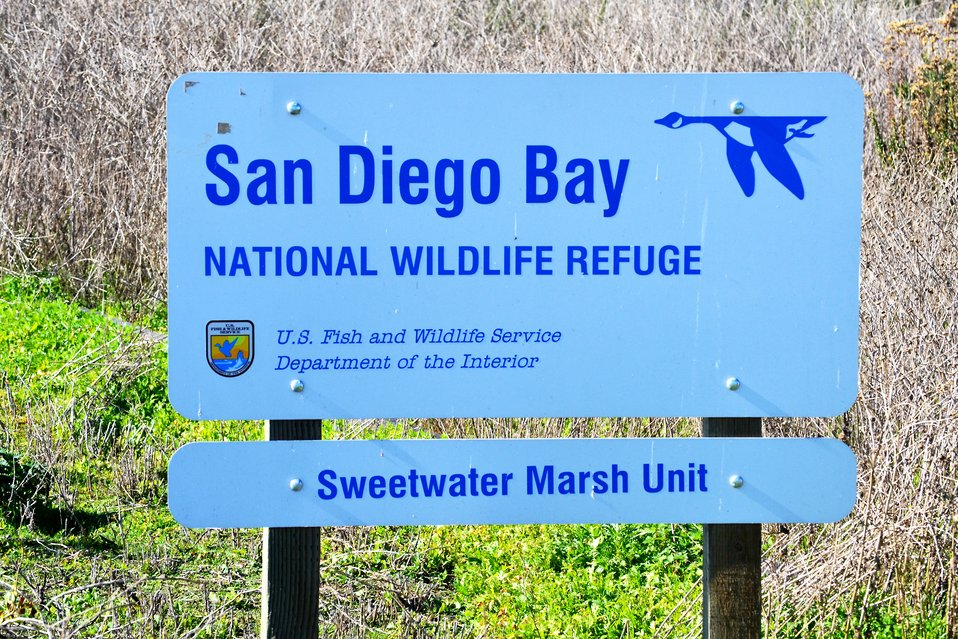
Entrance sign